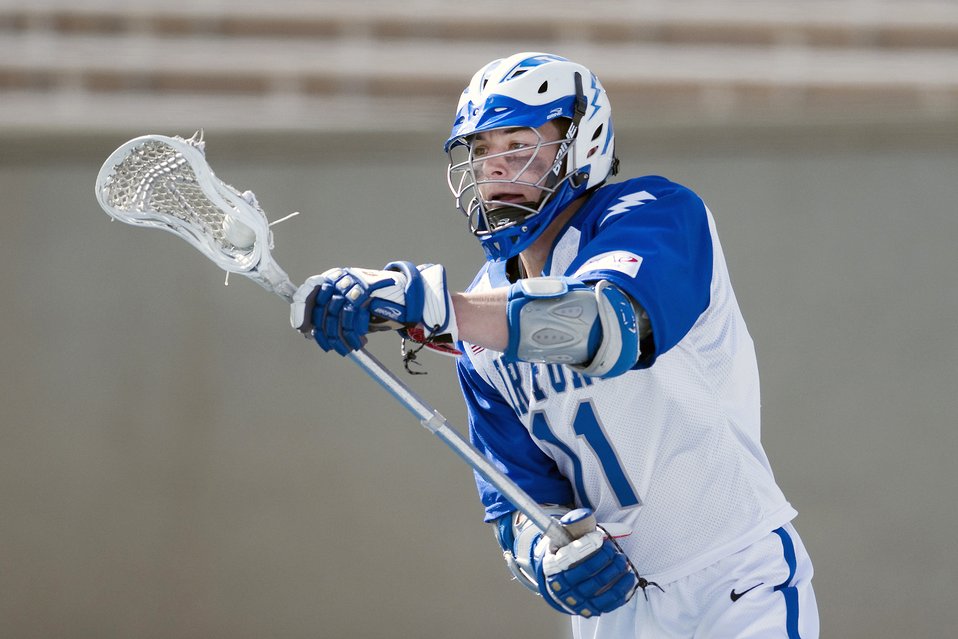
Lacrosse: Falcons defeat Black Knights

Air Force senior Ridge Flick catches the ball during the March 13, 2010, lacrosse game held at the U.S. Air Force Academy's Falcon Stadium in Colorado. The Falcons defeated the Black Knights 8-7 in overtime. This was Air Force's first lacrosse victory against Army after 17 tries.